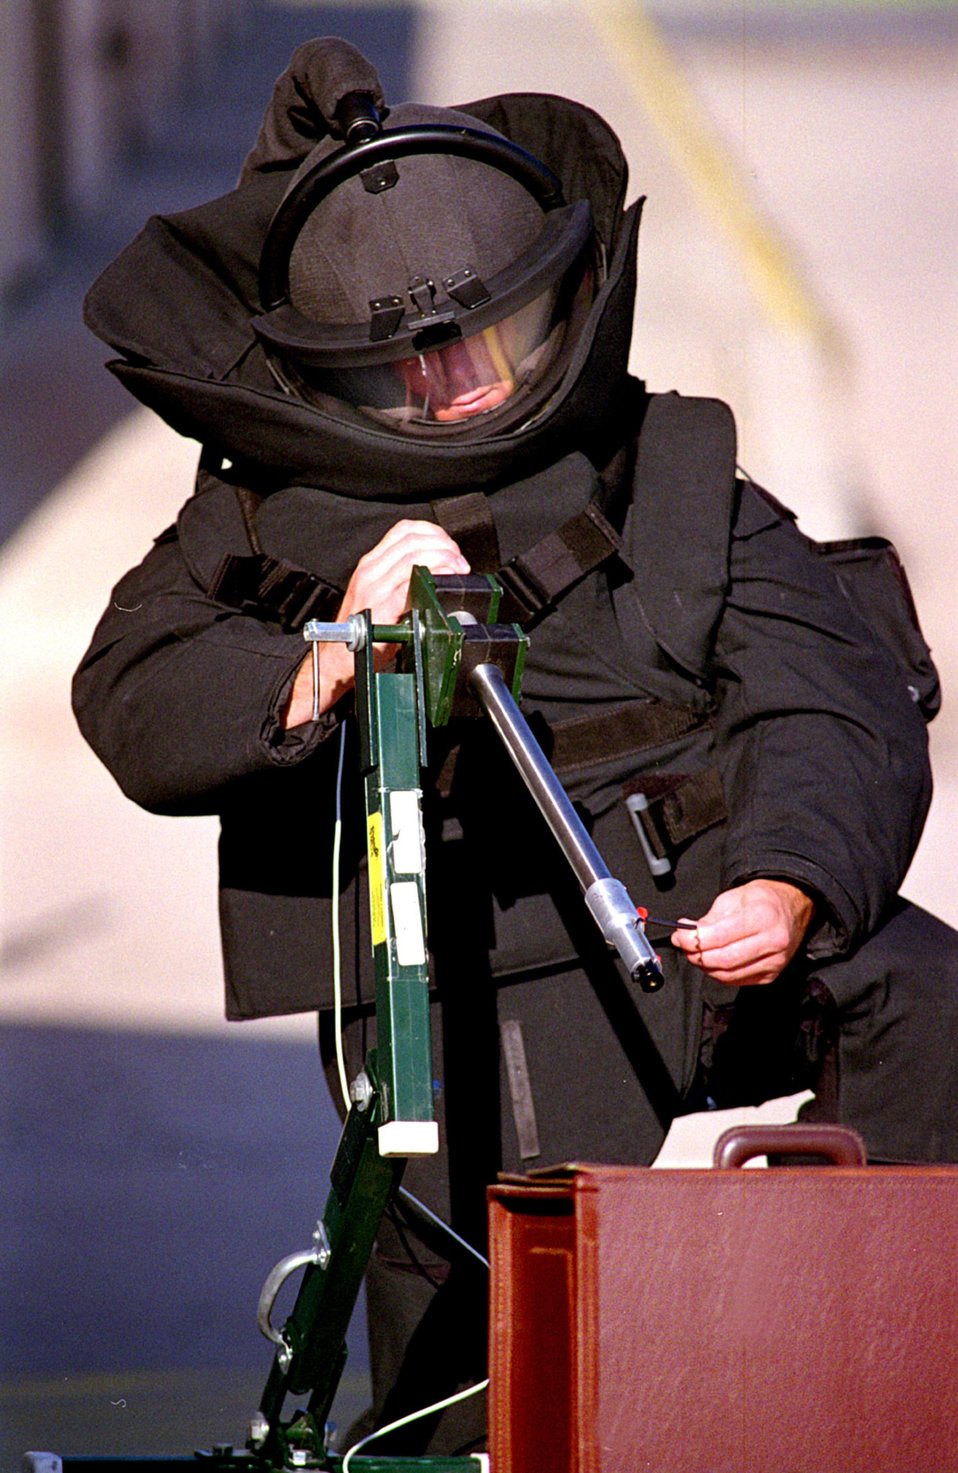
A BOMB TECHNICIAN IN PROTECTIVE GEAR DEMONSTRATES A PAN DISRUPTER BY AIMING IT AT A MOCK BRIEFCASE BOMB.

THIS DEMONSTRATION IS PART OF THE TECHNOLOGY SHOWN DURING OPERATION AMERICA TRAINING PROGRAMS. OPERATION AMERICA WORKSHOPS FOCUS ON THE SCIENCE OF EXPLOSIVES AND ADVANCED TECHNOLOGIES TO PROTECT THE PUBLIC FROM TERRORISTS. THE PERCUSSION-ACTUATED NON-ELECTRIC (PAN) DISRUPTER, DEVELOPED AT SANDIA, HAS BECOME A PRIMARY TOOL USED BY BOMB SQUADS NATIONWIDE TO DISABLE CONVENTIONAL, HANDMADE-TYPE BOMBS, SUCH AS A SHOE BOMB.